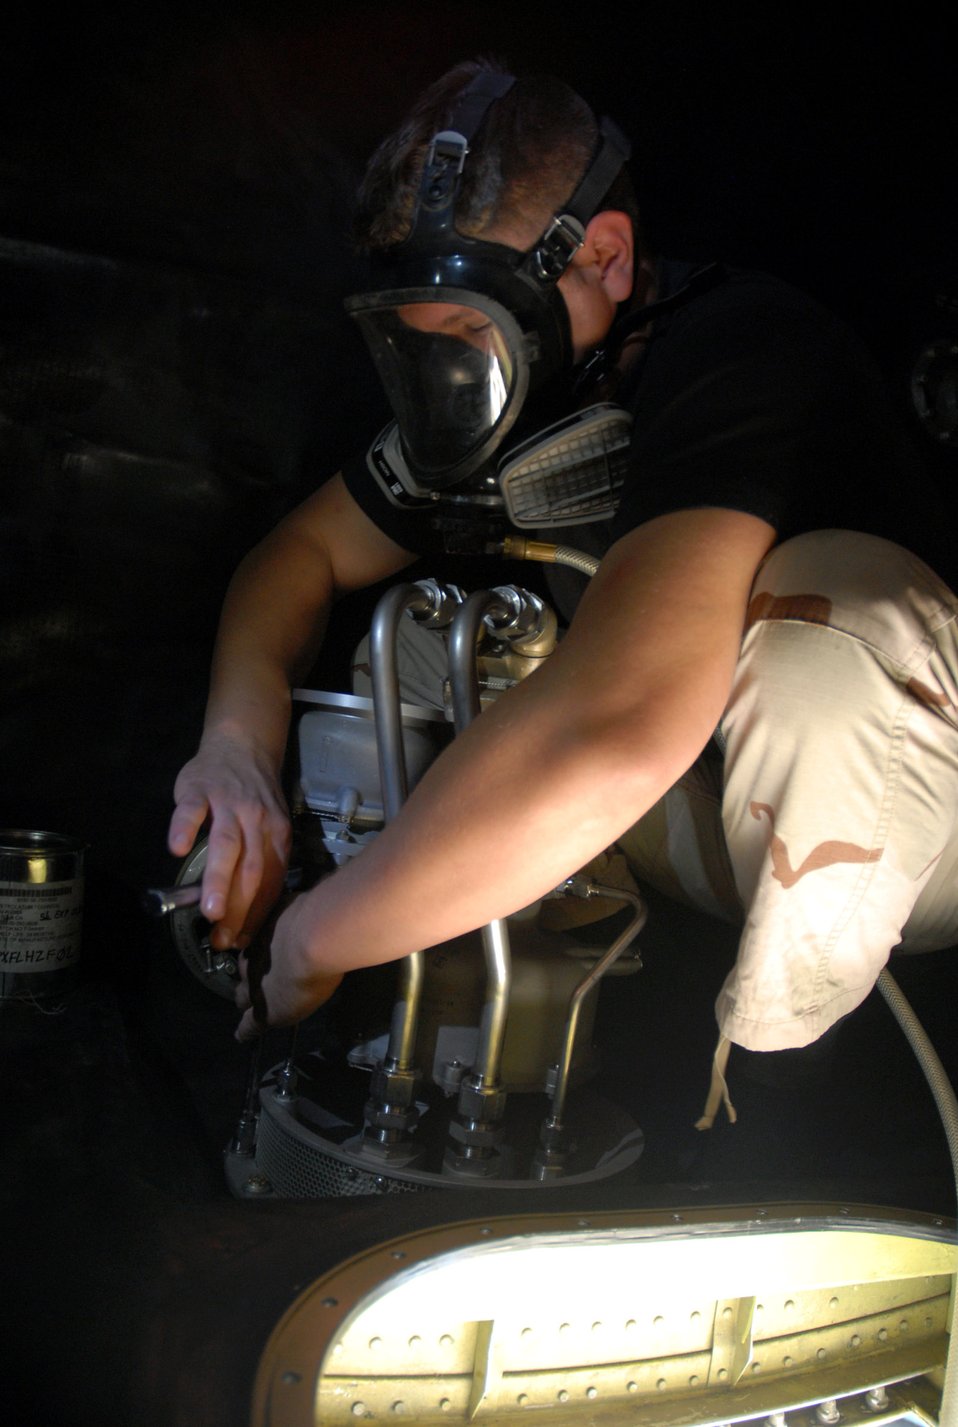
Pump it up: Airman goes with the flow

Wearing protective equipment in case of fuel fumes, Airman 1st Class Shaun Carrig installs an air refueling pump in the number three forward body fuel tank of a KC-135 Stratotanker Nov. 17 in Southwest Asia. The new fuel pump with ensure better gas flow for the aircraft. Airman Carrig is a fuel systems journeyman with the 379th Expeditionary Aircraft Maintenance Squadron and is deployed from Grand Forks Air Force Base, N.D.